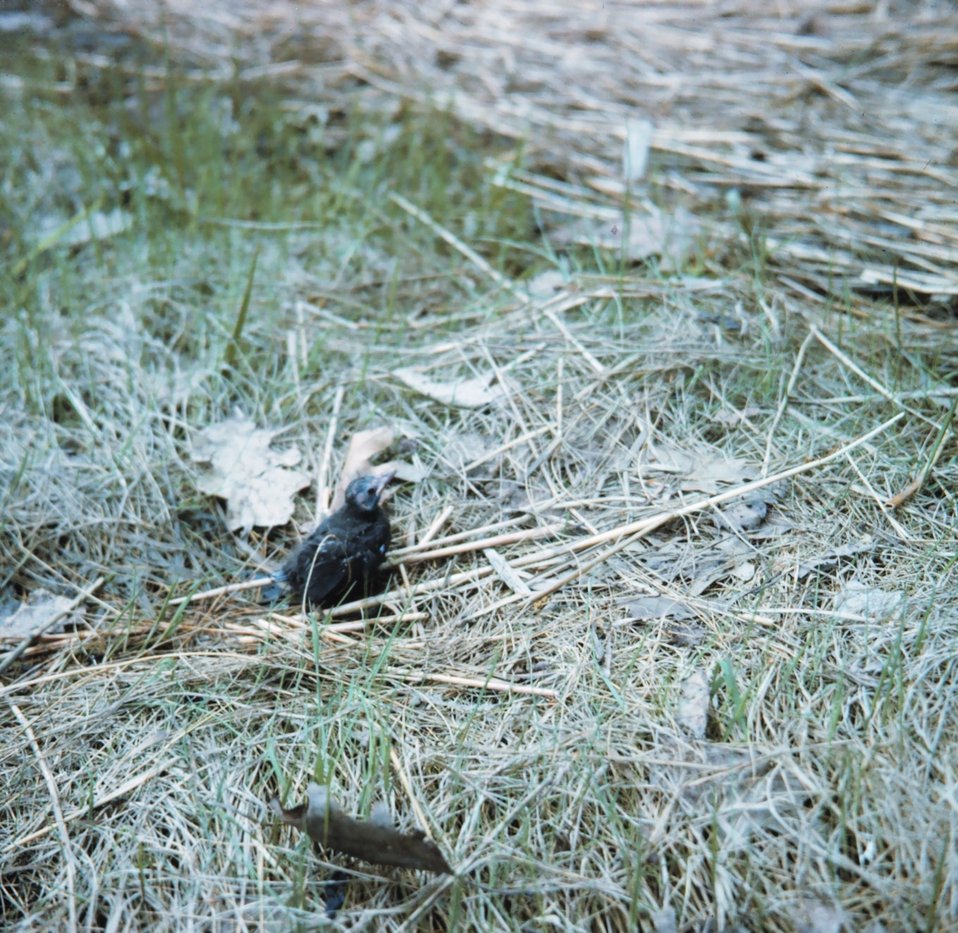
Young, unidentified shore bird.